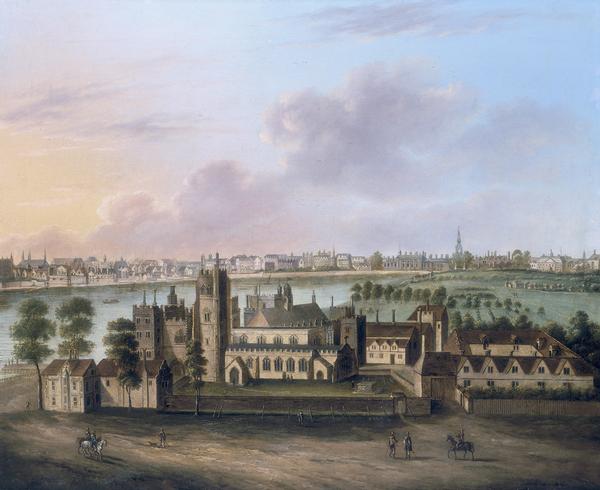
'Lambeth Palace', c1685 MoL